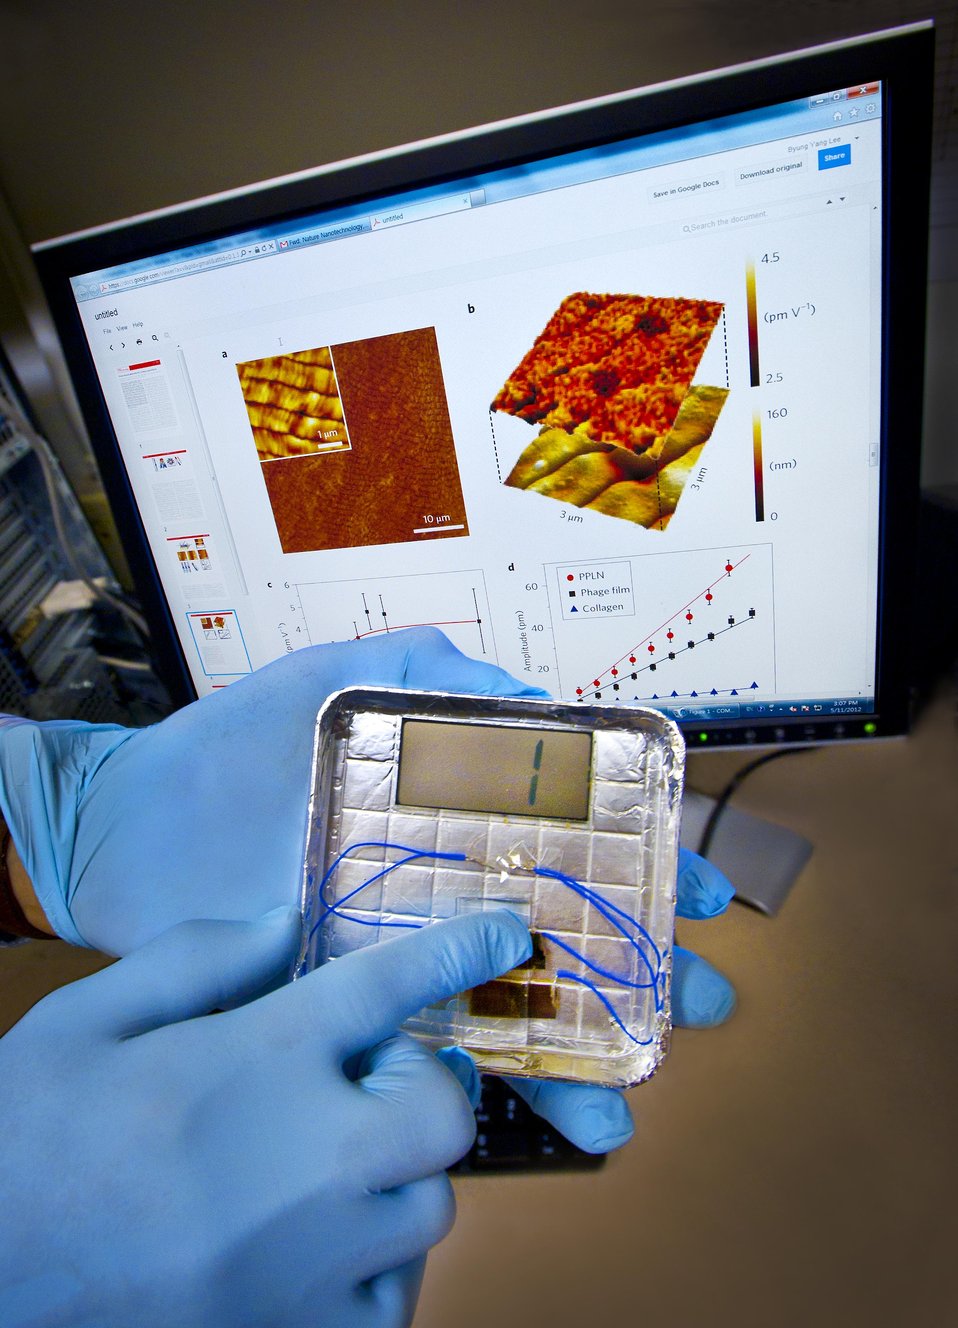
Lawrence Berkeley National Laboratory scientists have developed a way to generate power using harmless viruses that convert mechanical energy into electricity.

The scientists tested their approach by creating a generator that produces enough current to operate a small liquid-crystal display. It works by tapping a finger on a postage stamp-sized electrode coated with specially engineered viruses. The viruses convert the force of the tap into an electric charge.